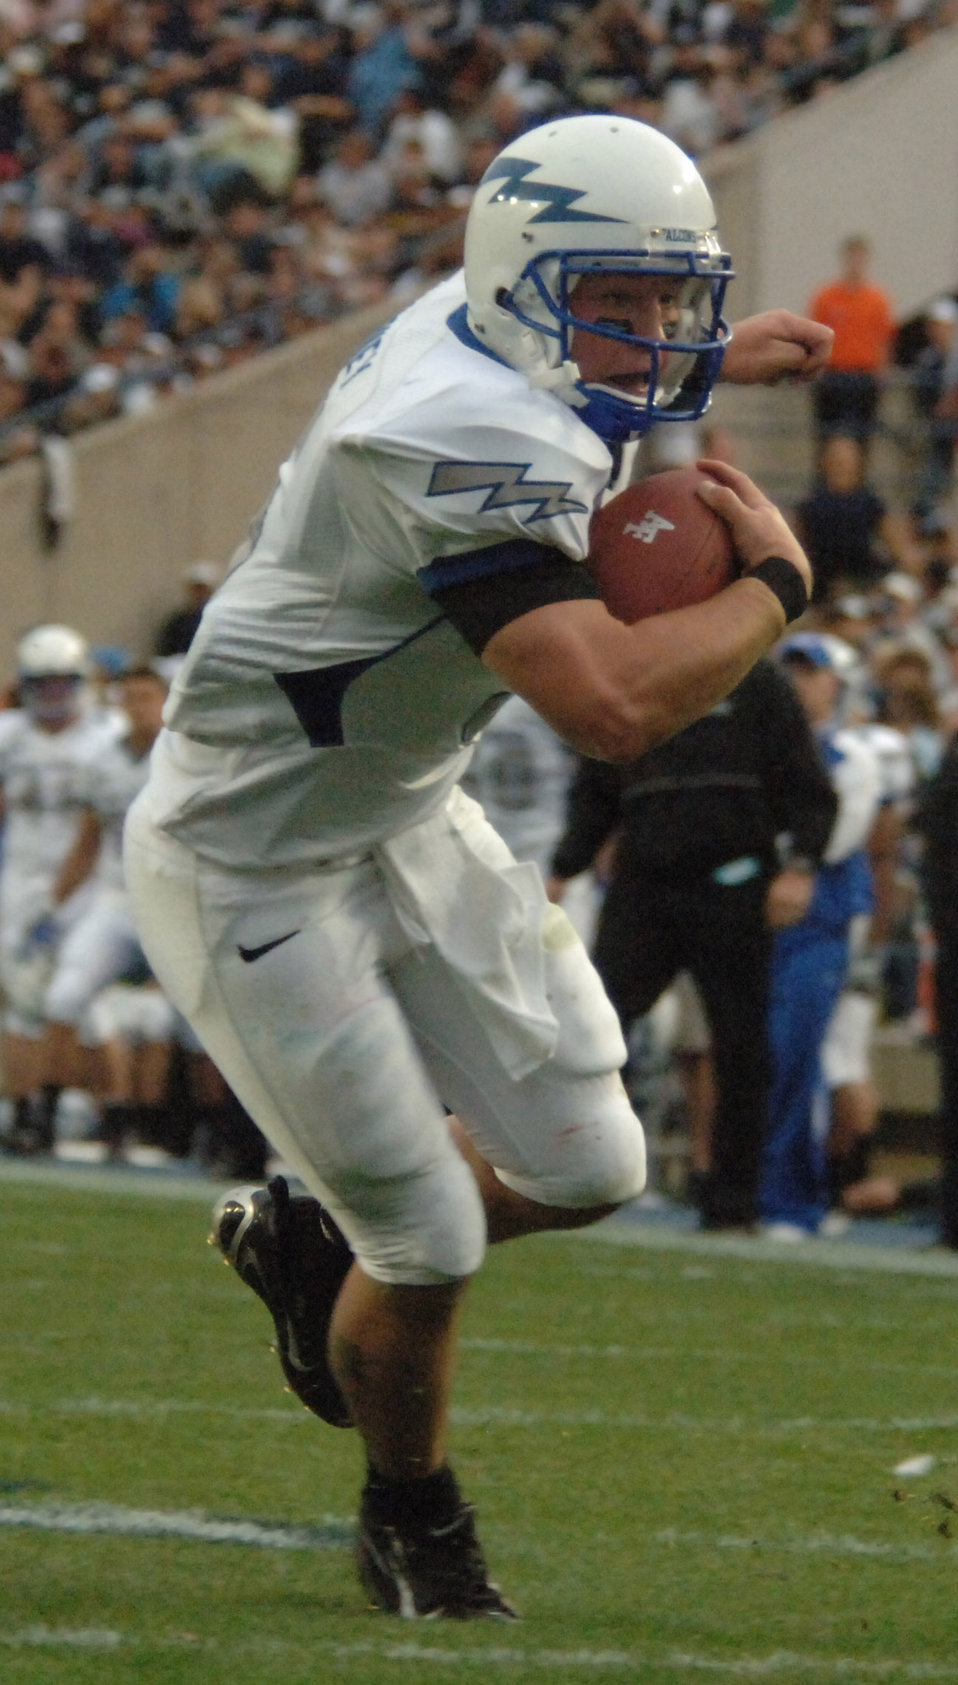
NBC will broadcast Falcons-Fighting Irish game

U.S. Air Force Academy quarterback Shaun Carney will appear on national television when the Falcons take on the Notre Dame Fighting Irish Nov. 10